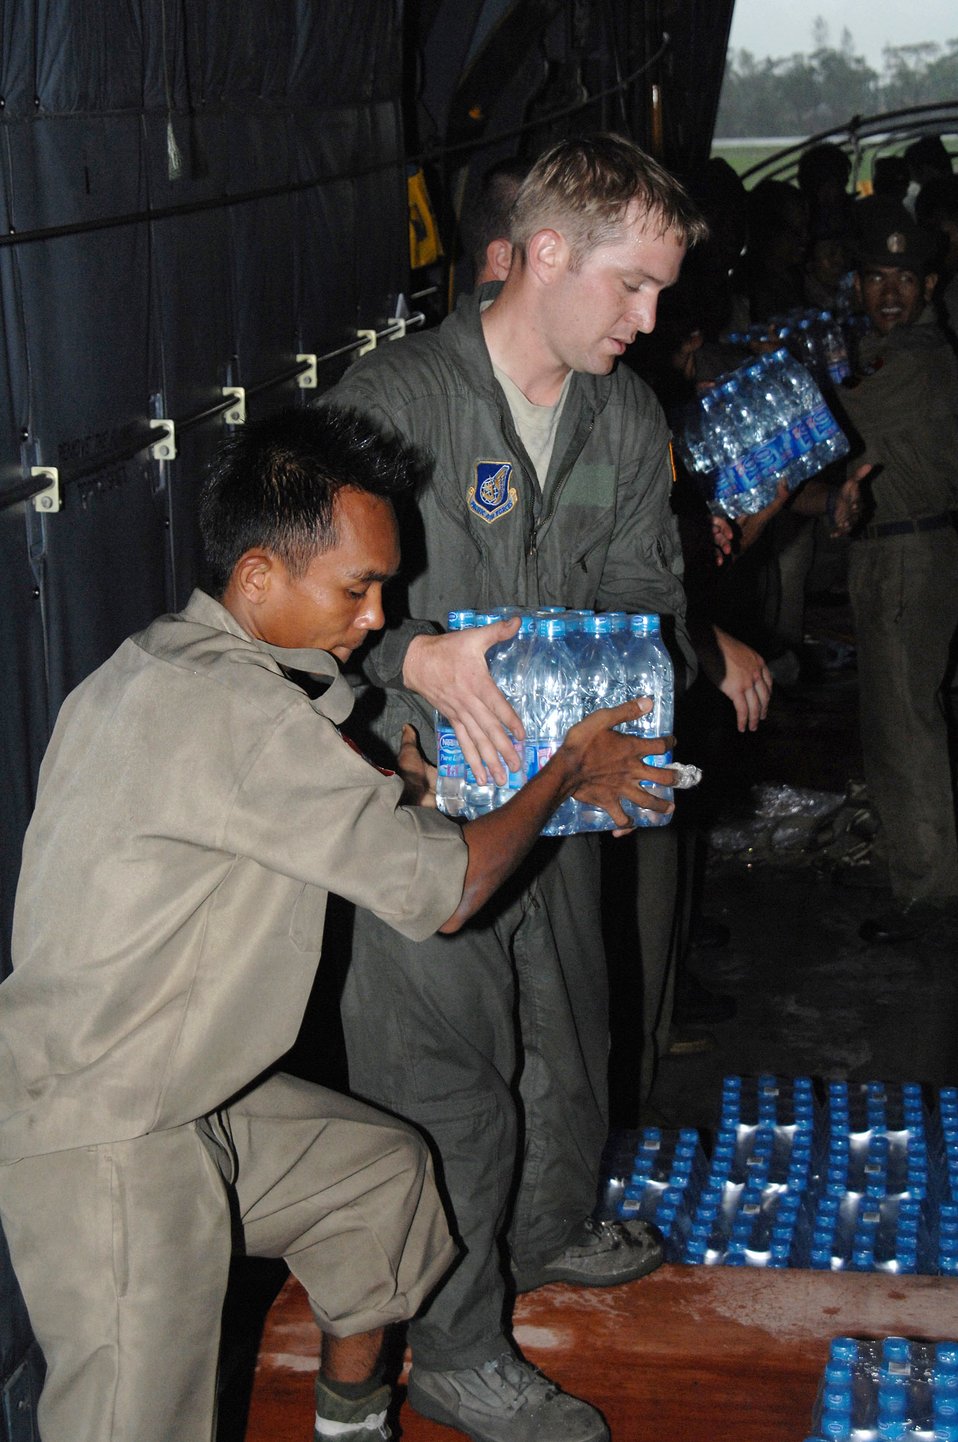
Joint Task Force Caring Response brings help to Burma

Staff Sgt Joseph Strutton helps a local Burmese man transfer water from a pallet aboard a U.S. Air Force C-130 Hercules May 19 to a truck at the Yangon International Airport in Burma. Sergeant Strutton is with the 374th Airlift Wing from Yokota Air Base, Japan. The relief supplies will be delivered to the citizens of Burma who were devastated by a recent cyclone.